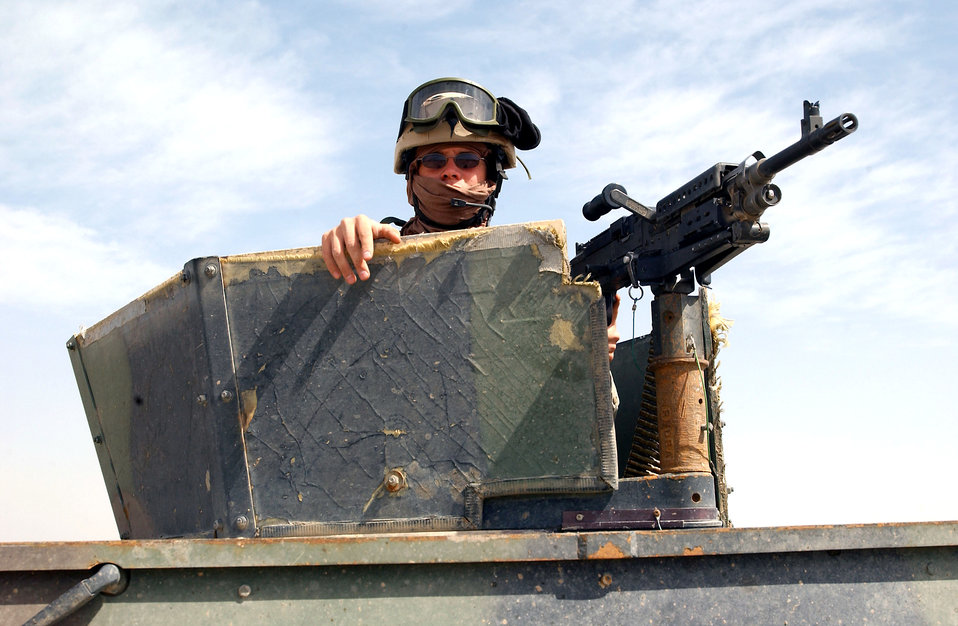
Airmen, Soldiers reach out to local Bedouins

NEAR TALLIL AIR BASE, Iraq -- Airman 1st Class John Hernandez stands guard during a visit to the Bedouin camps here. He is assigned to the 407th Security Forces Squadron.